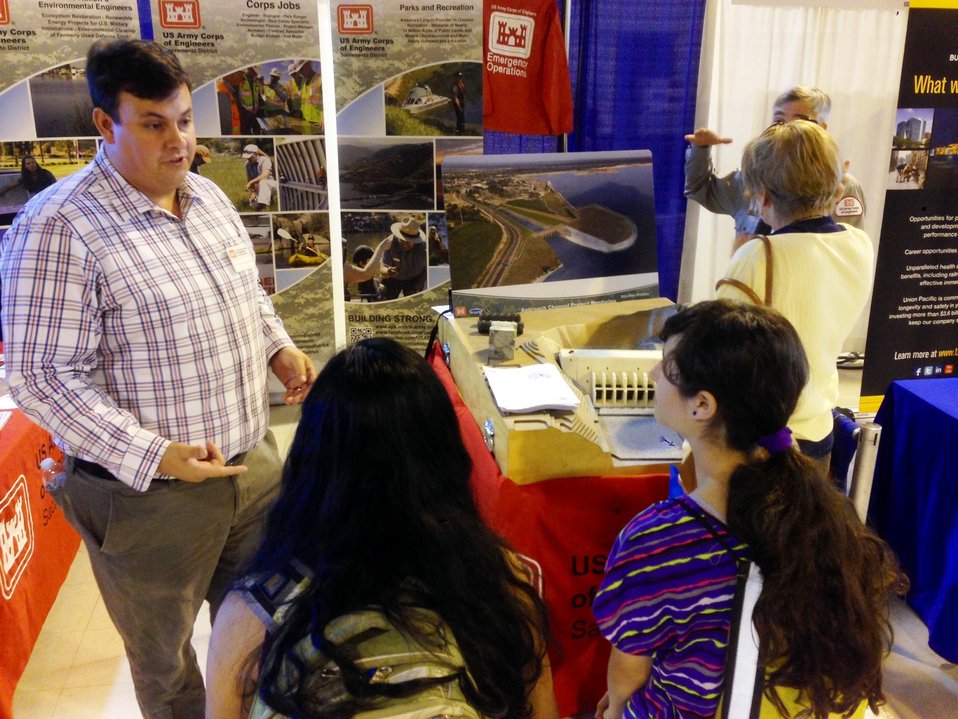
Matthew Valentine talks jobs at GPS Career Fair

Matthew Valentine, an architect with the U.S. Army Corps of Engineers Sacramento District, explains Corps job opportunities to local high school students at the GPS Career Fair at Cal Expo in Sacramento, Calif., Sept. 25, 2013. The district hosted a booth at the event to encourage kids to pursue careers in science, technology, engineering and mathematics, or STEM.